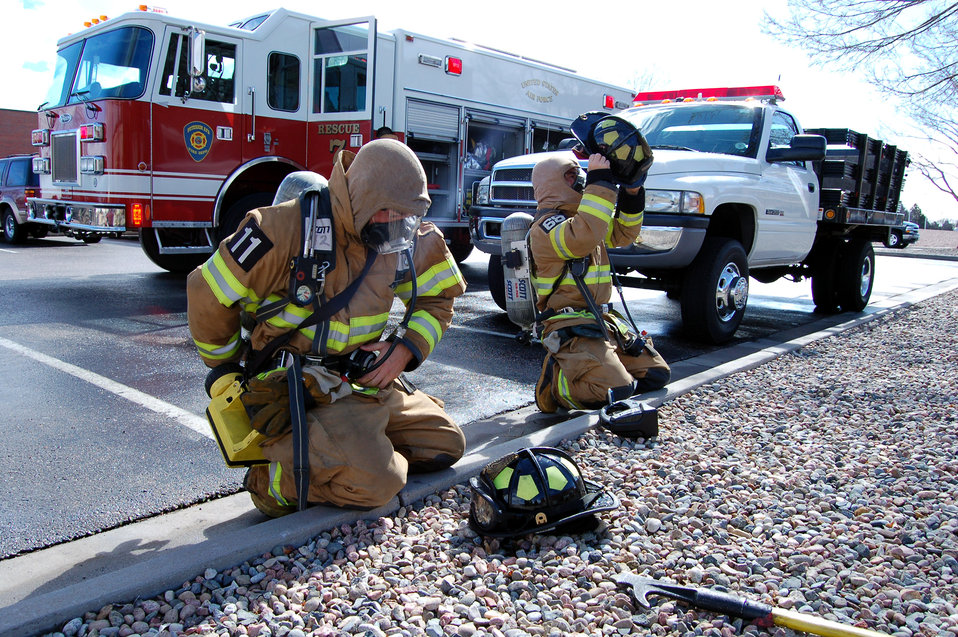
Firefighter lives his childhood dream

Senior Airman Jesse Simons (left) and Tech. Sgt. Chancy Cruger don their self contained breathing apparatuses during a firefighting exercise April 10 at Peterson Air Force Base, Colo. The training is essential to keeping the firefighters sharp and ready to perform their duties in a moment's notice.